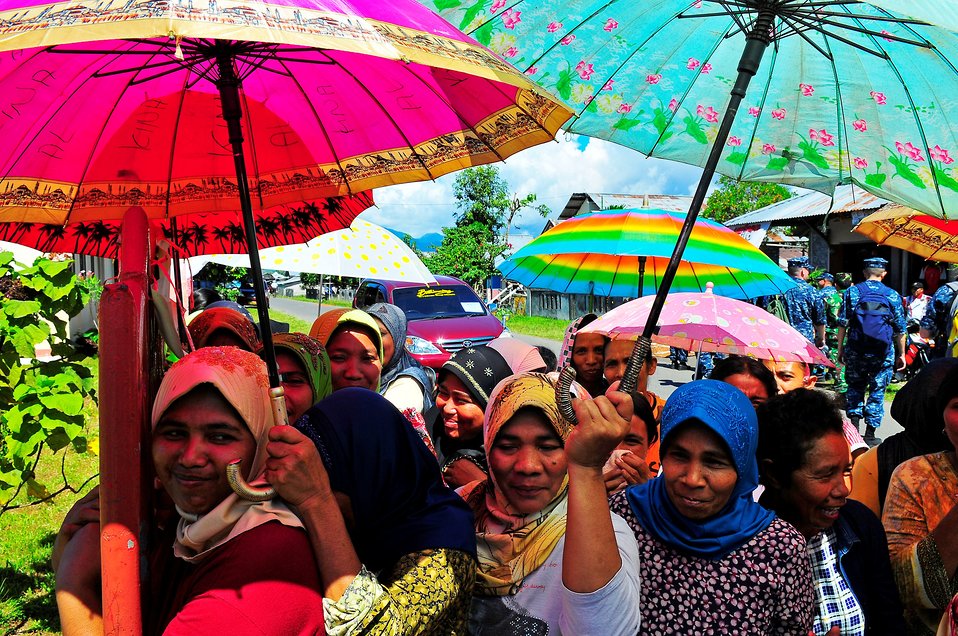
Local Indonesians wait to receive medical screening and treatment at a medical civic action program, conducted at the Dokulamo school by the Military Sealift Command hospital ship USNS Mercy (T-AH 19) during its visit to Tobelo, Indonesia, on July 14, 2010. Mercy is deployed for Pacific Partnership 2010, the fifth in a series of annual U.S. Pacific Fleet endeavors conducted in Indonesia as a disaster relief exercise aimed at strengthening regional partnerships.